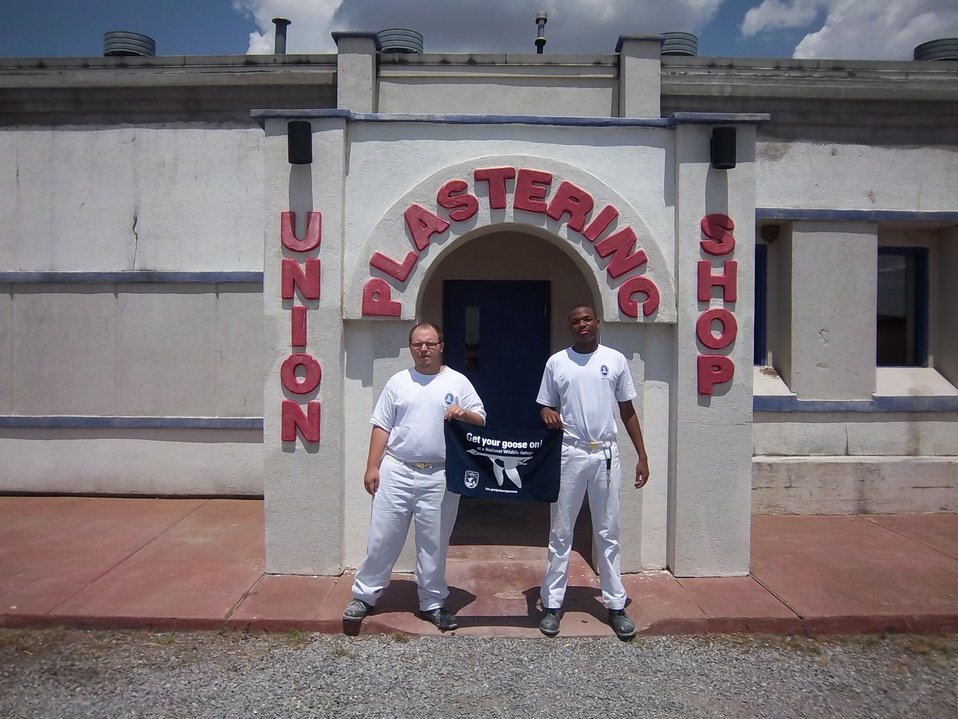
Get Your Goose On!

Wichita Mountains National Wildlife Refuge in Oklahoma.